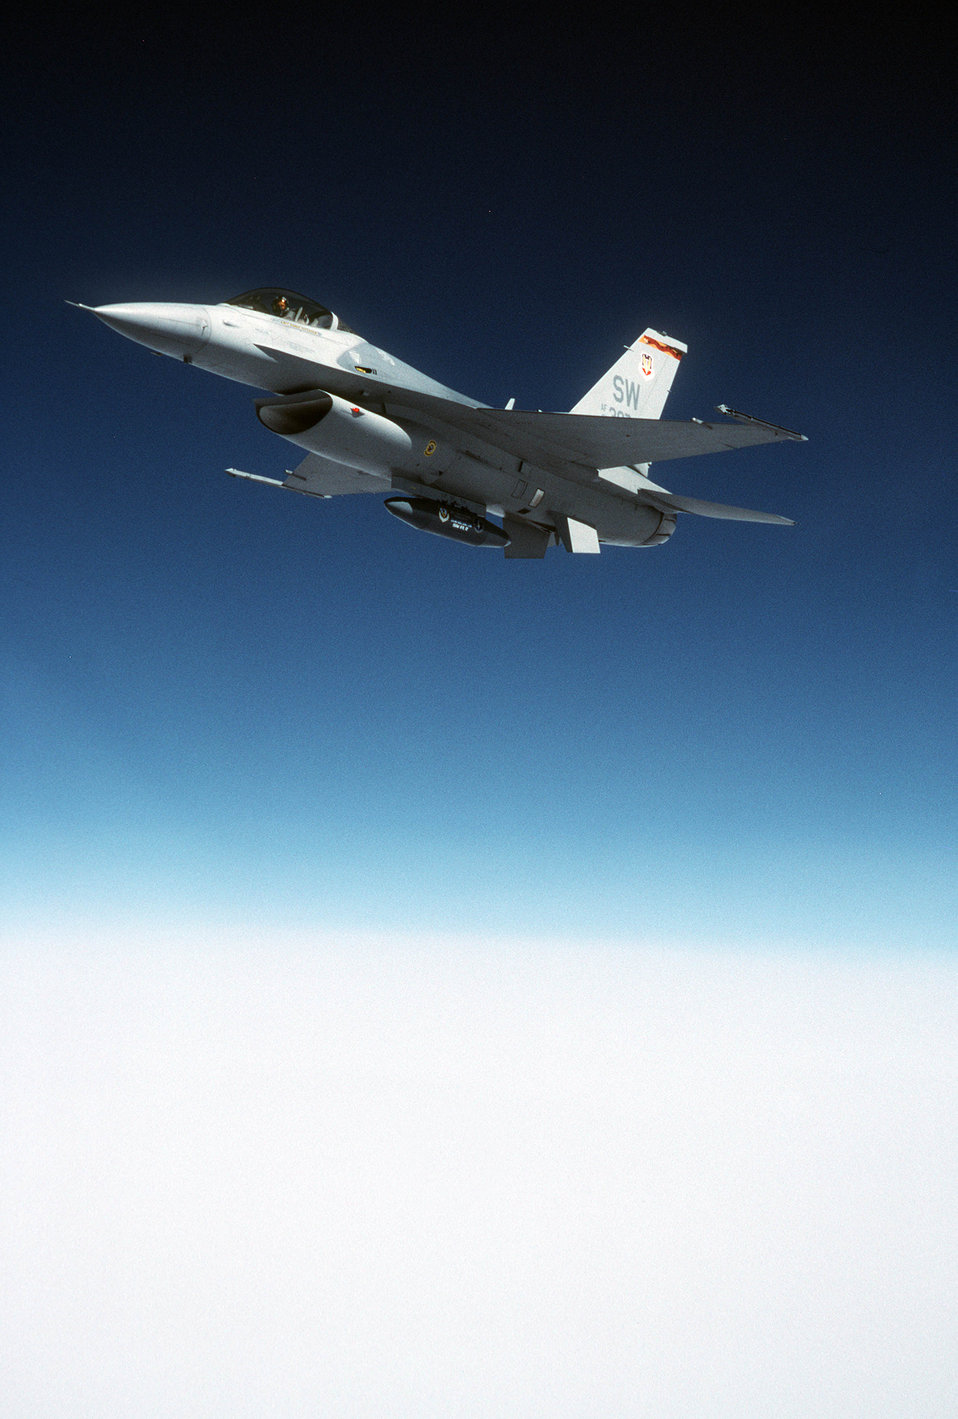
Falcon in flight

FILE PHOTO -- The F-16 Fighting Falcon is a compact, multirole fighter aircraft. It is highly maneuverable and has proven itself in air-to-air combat and air-to-surface attack. It provides a relatively low-cost, high-performance weapon system for the United States and allied nations.